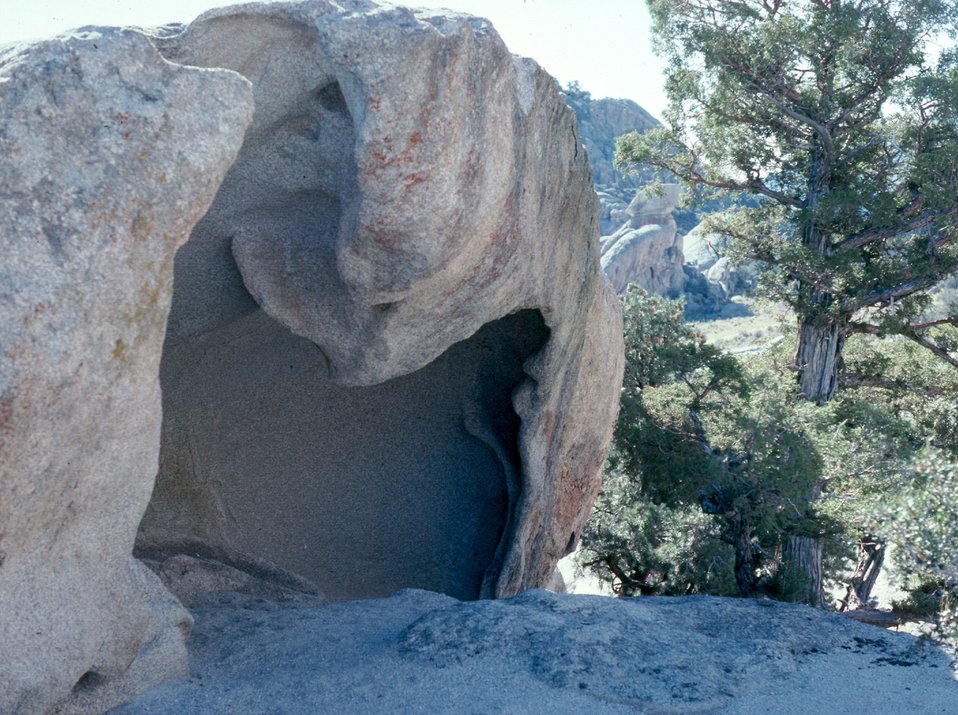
Silent City Hollow Formations Burley Field Office USRD Upper Snake River District